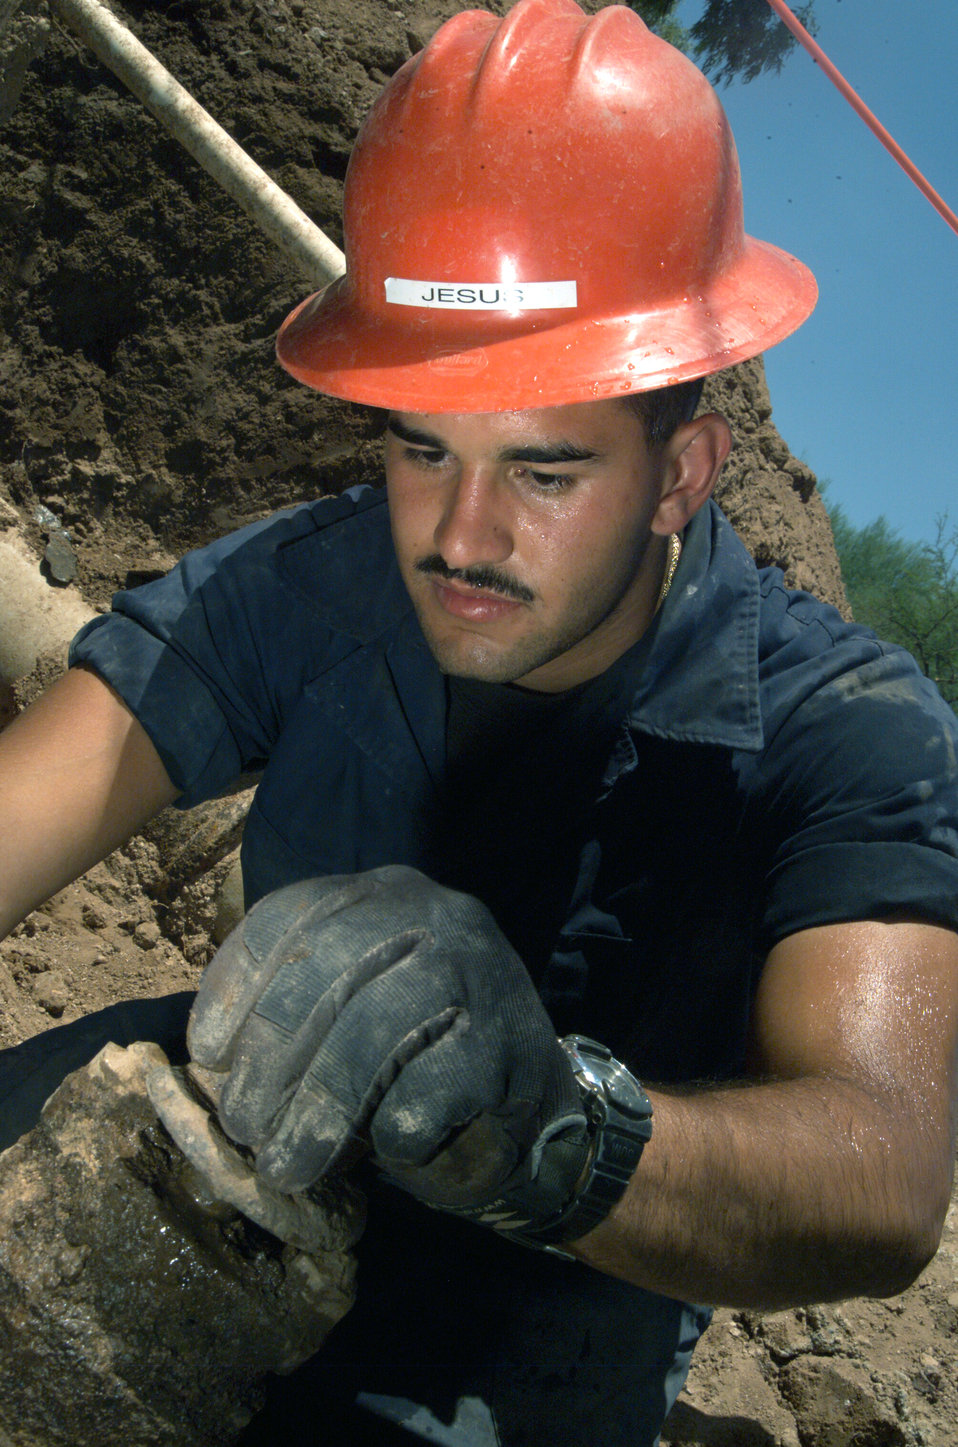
Pulling pipe

DAVIS-MONTHAN AIR FORCE BASE, Ariz. - Senior Airman Jesus Davila Vega, loosens the pipe on a plumbing project here Aug. 13. Airman Vega is a utilities system journeymen assigned to the 355th Civil Engineer Squadron.